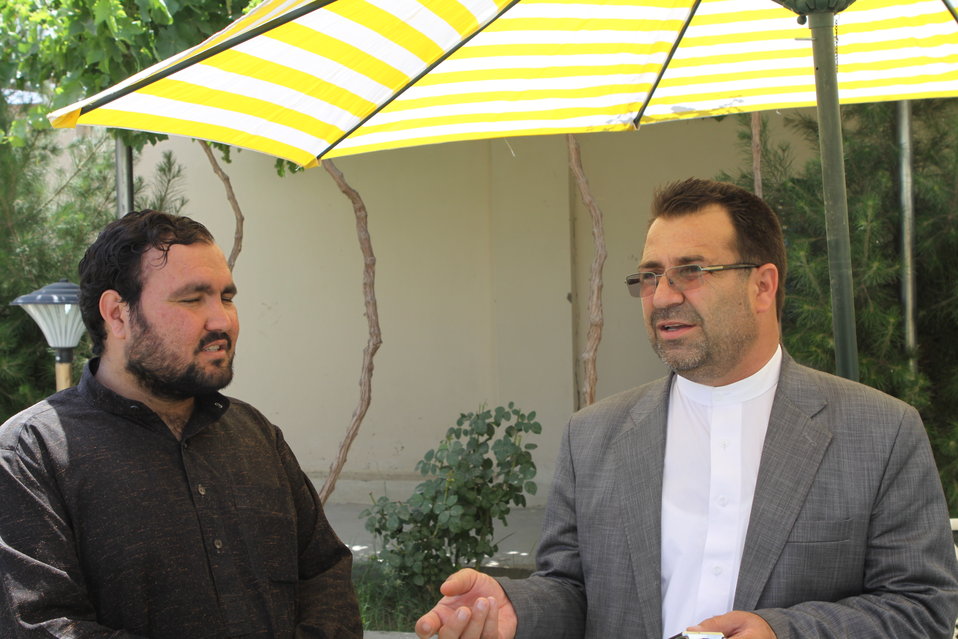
Bolan Poultry Farm